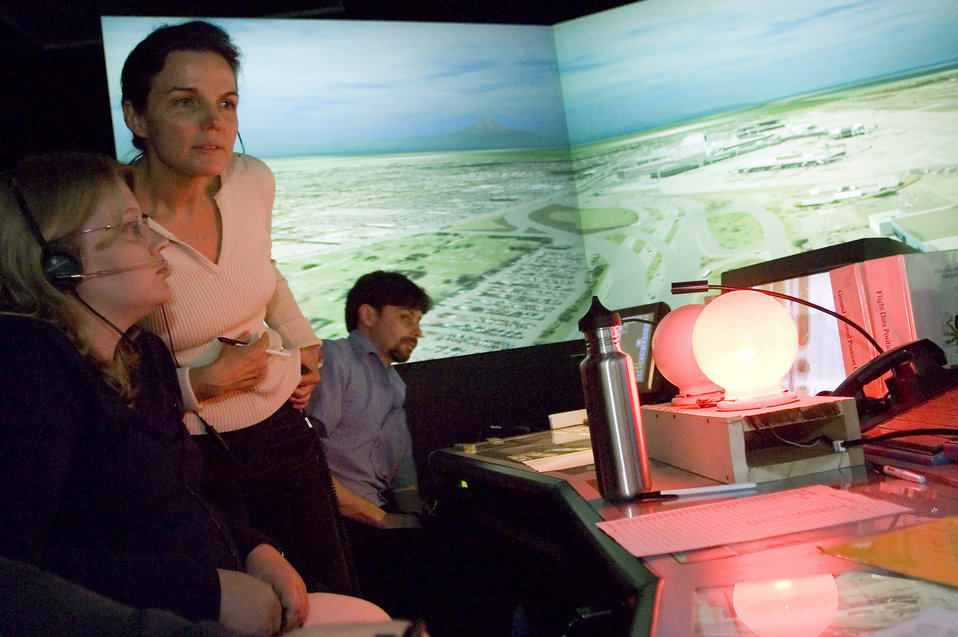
McChord Airmen help controllers train for new runway

Jeanette Roller monitors simulated traffic while undergoing training Nov. 4 at McChord Air Force Base, Wash. Ms. Roller is a Seattle-Tacoma International Airport air traffic controller.